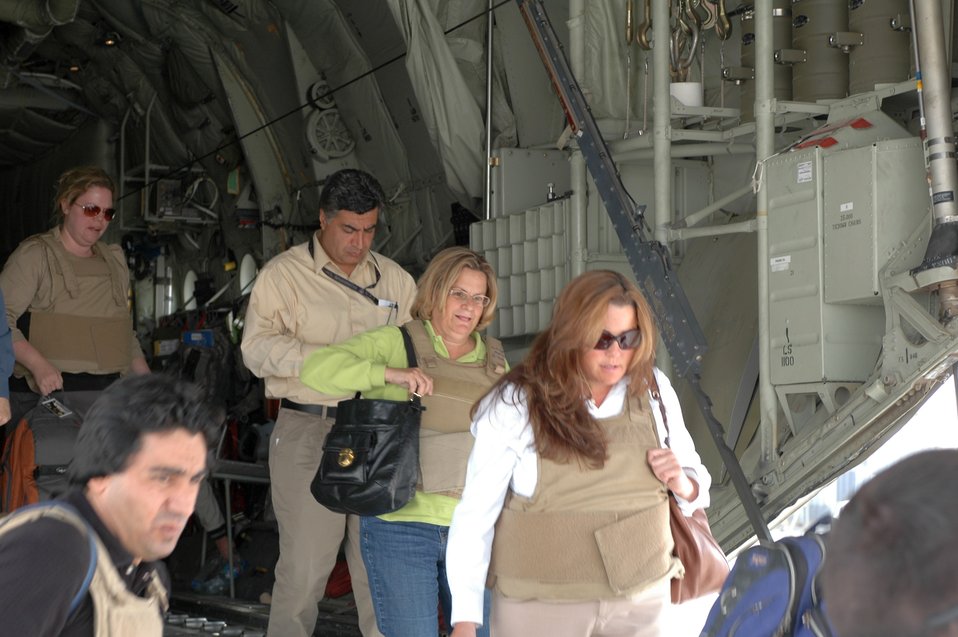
CODEL Berman